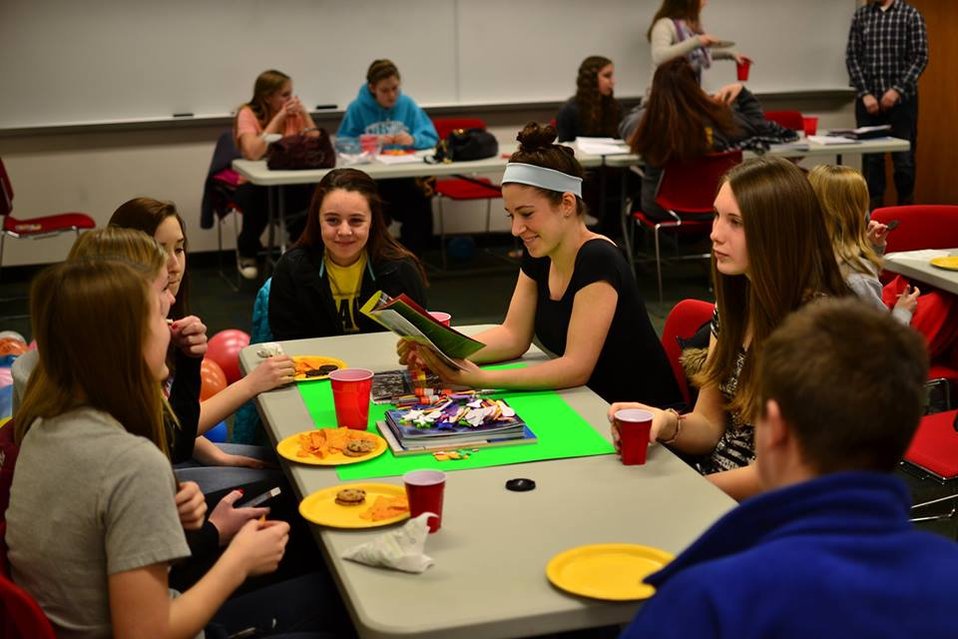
PASA Teen Board Panel Party. We had over 30 teens and adults gather to shatter the myths!